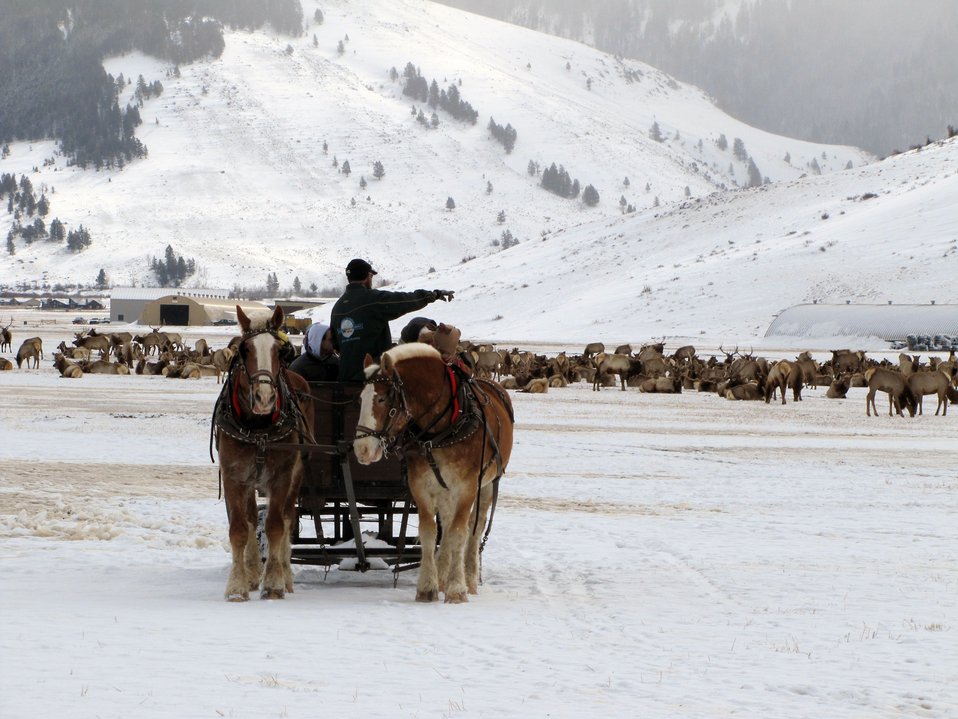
Sleigh ride in elk country

The driver of a horse-drawn sleigh directs passengers' attention to an elk herd at National Elk Refuge in Wyoming.